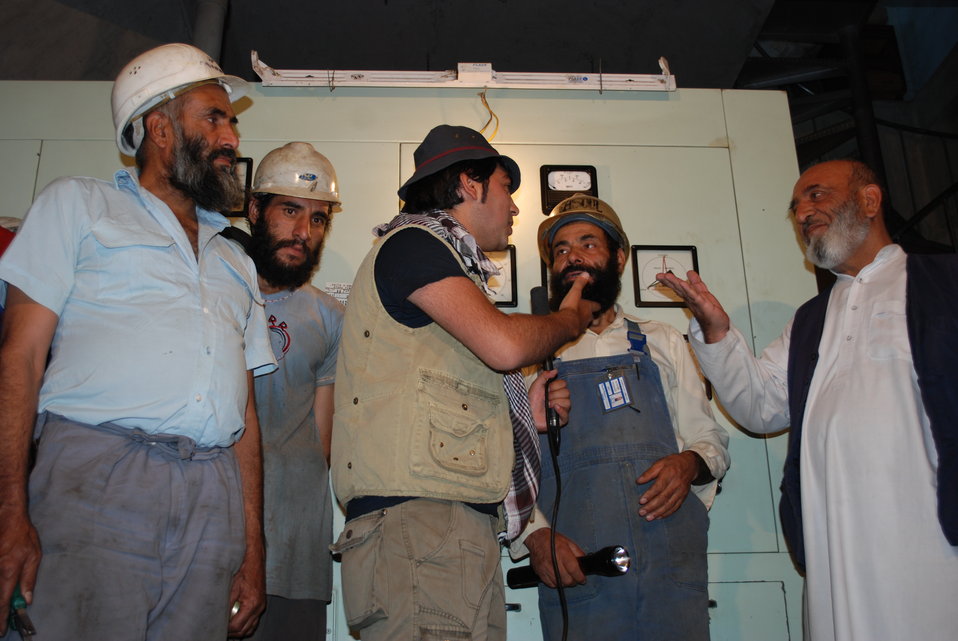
'On the Road' in Kandahar